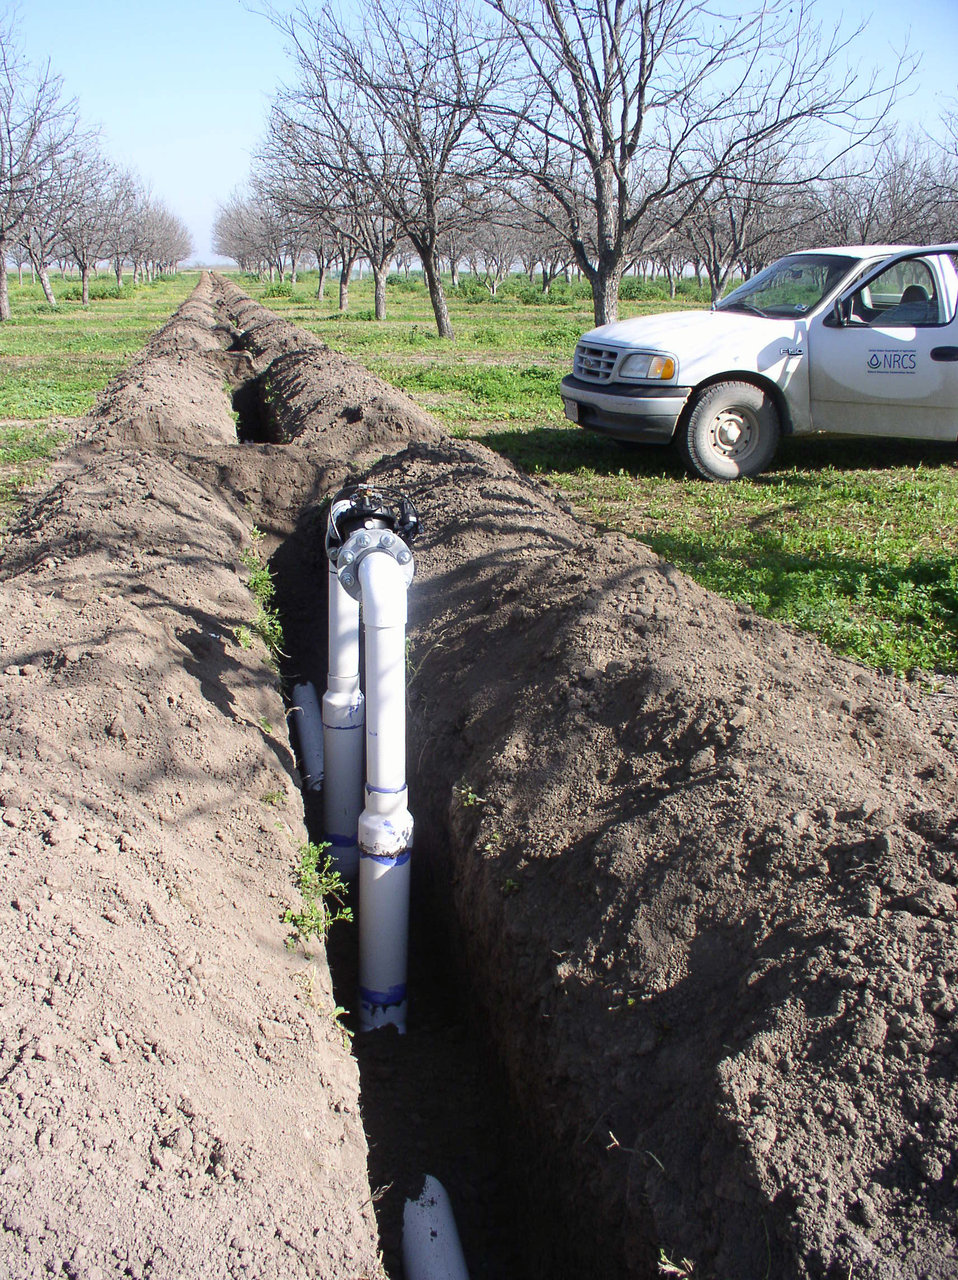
Water distribution pipes for micro irrigation have been trenched and lie well protected from the environment and heavy equipment at Arrowhead Farms of Crystal City, TX, on Monday, March 1, 2010. Only flow control and pressure regulating valves are above ground in the orchard area. Tubes with water emitters will radiate out from the pipes and run, 10 inches underground, along rows of 4,380 pecan trees on 146 acres. Owner Akram Mohammad said, “USDA (U.S. Department of Agriculture) was essential to my business and trees surviving the recent exceptional drought. The trees were stress free thanks to underground micro-irrigation. This is essential to the future growth of Texas agriculture and good for America.” U.S. Department of Agriculture’s (USDA) Environmental Quality Initiative Program (EQIP) awarded Mr. Mohammad a $130,000 grant in 2008. He provided $26,000 for the balance of the $156,000 total cost to install a 146-acre underground micro-irrigation for 4,380 trees.